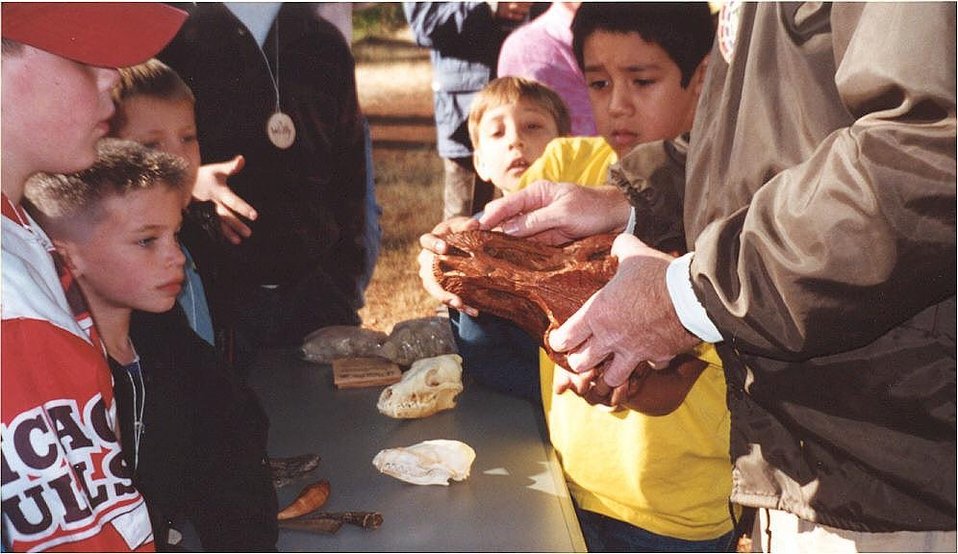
Public Lands Day fossil demonstration.